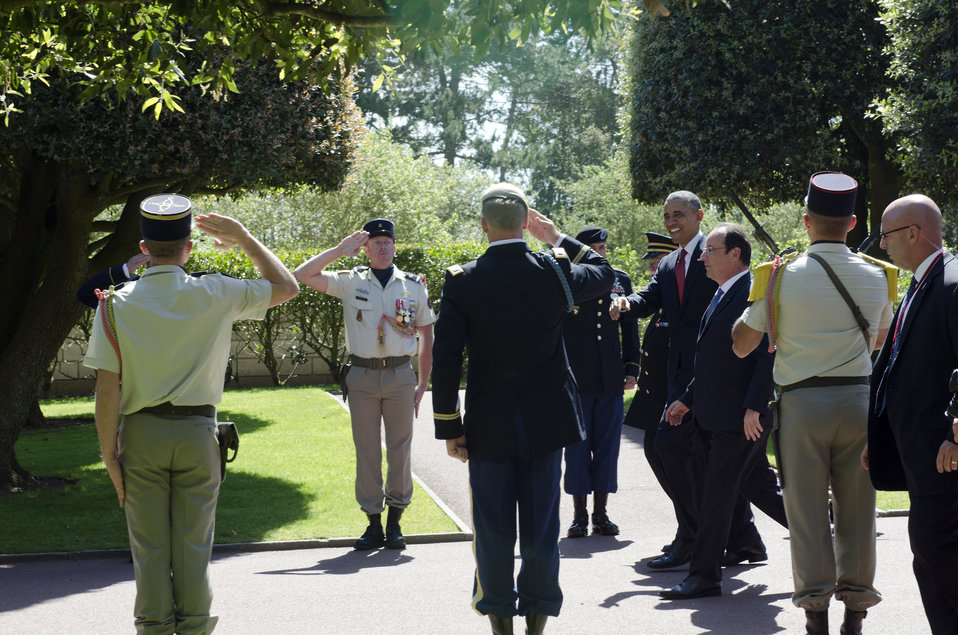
President Obama and French President Hollande Arrive at the Normandy American Cemetery

U.S. President Barack Obama and French President Francois Hollande arrive at the Normandy American Cemetery at Omaha Beach as he participates in the 70th anniversary of D-Day in Colleville sur Mer in Normandy, France, on June 6, 2014.